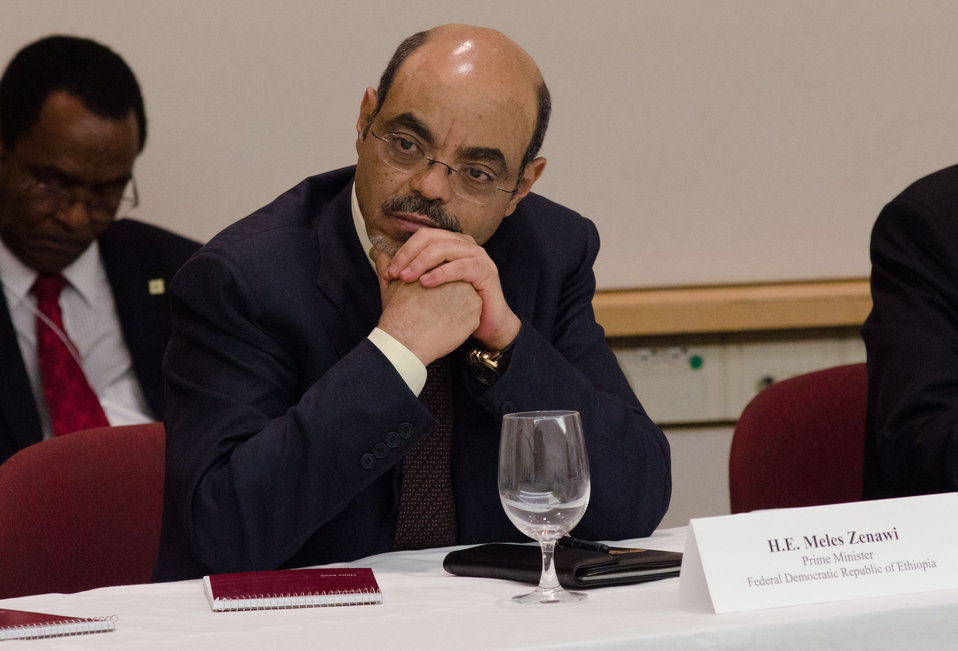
Prime Minister of Ethiopia His Excellency Meles Zenawi makes remarks at the African Heads of State conference at the Ronald Reagan Federal Building in Washington, D.C., on Friday, May 18, 2012.